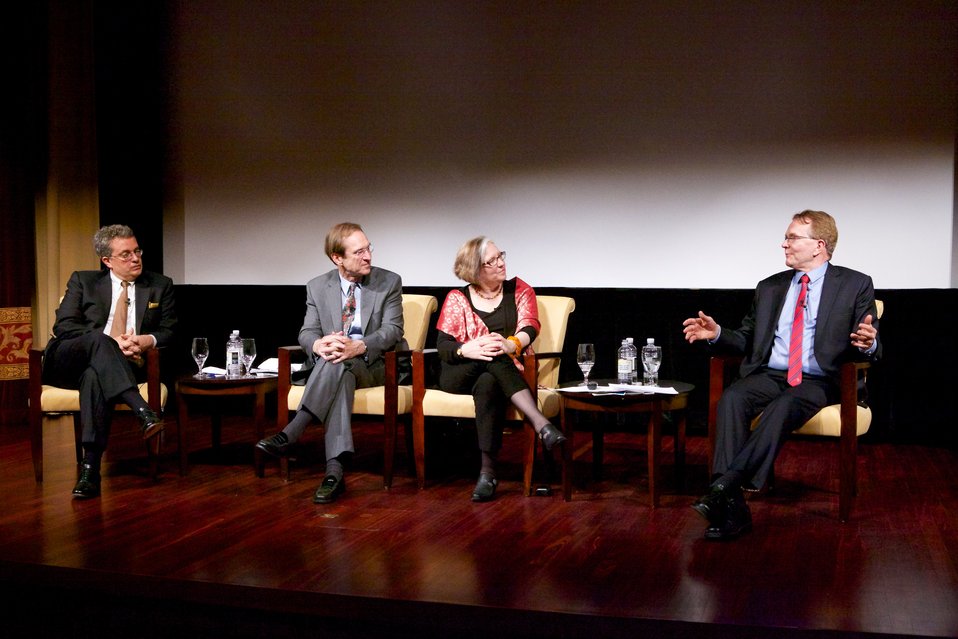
Jazz Diplomacy: Sending America's Music to the World